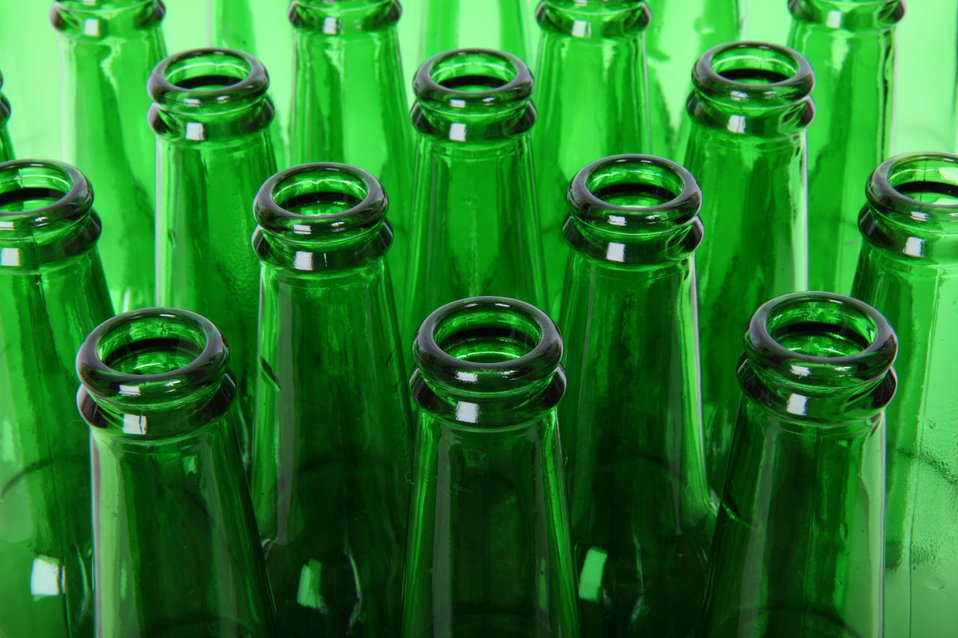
Bottle necks

Green bottle necks.